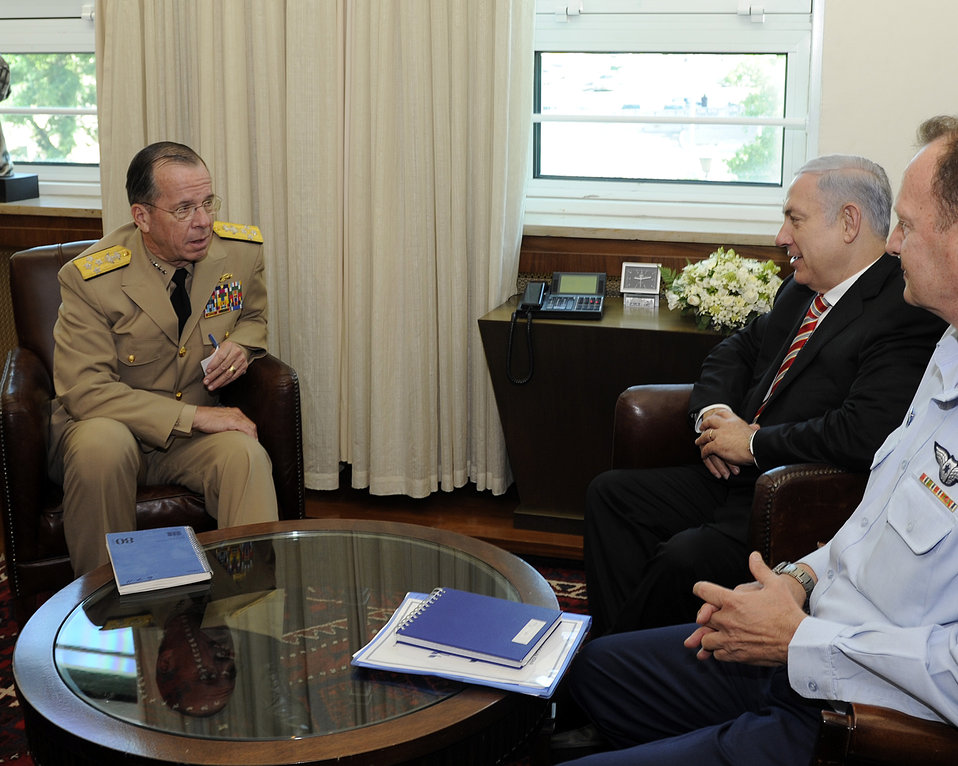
Admiral Mullen Meets With Israeli Prime Minister Netanyahu

Admiral Michael Mullen, Chairman of the Joint Chiefs of Staff of the U.S. Military, meets with Israeli Prime Minister Benjamin 'Bibi' Netanyahu, in Jerusalem on July 19.